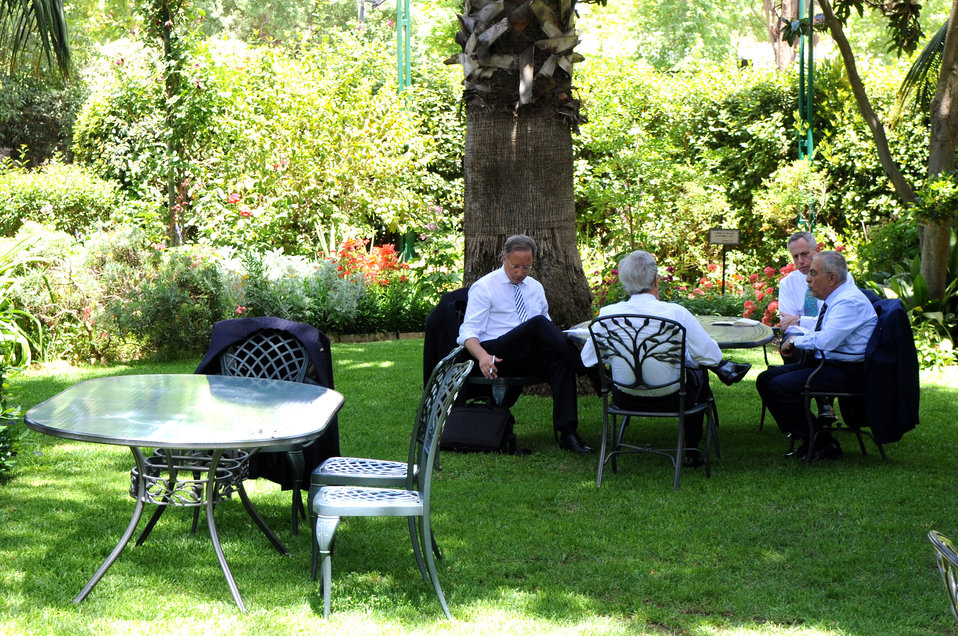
Secretary Kerry Meets With Palestinian Authority Prime Minister Fayyad

U.S. Secretary of State John Kerry and Palestinian Authority Prime Minister Salam Fayyad meet outdoors at the U.S. Consulate General in Jerusalem on May 24, 2013. Joining the discussion are U.S. Consul General Michael Ratney and Deputy Special Envoy for Middle East Peace Process Frank Lowenstein.